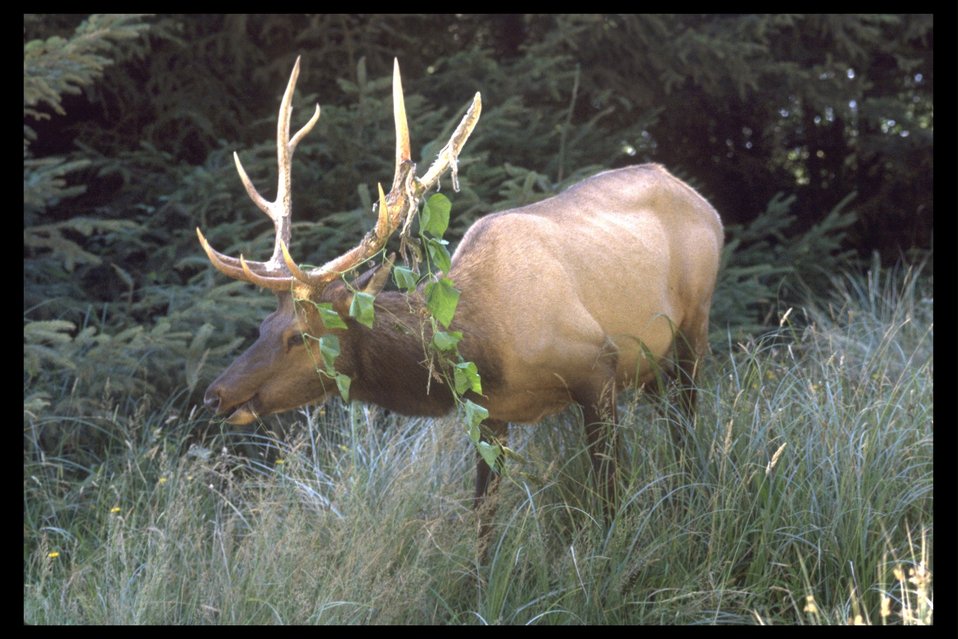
An Elk located in the Prairie Creek Redwoods Park in California.